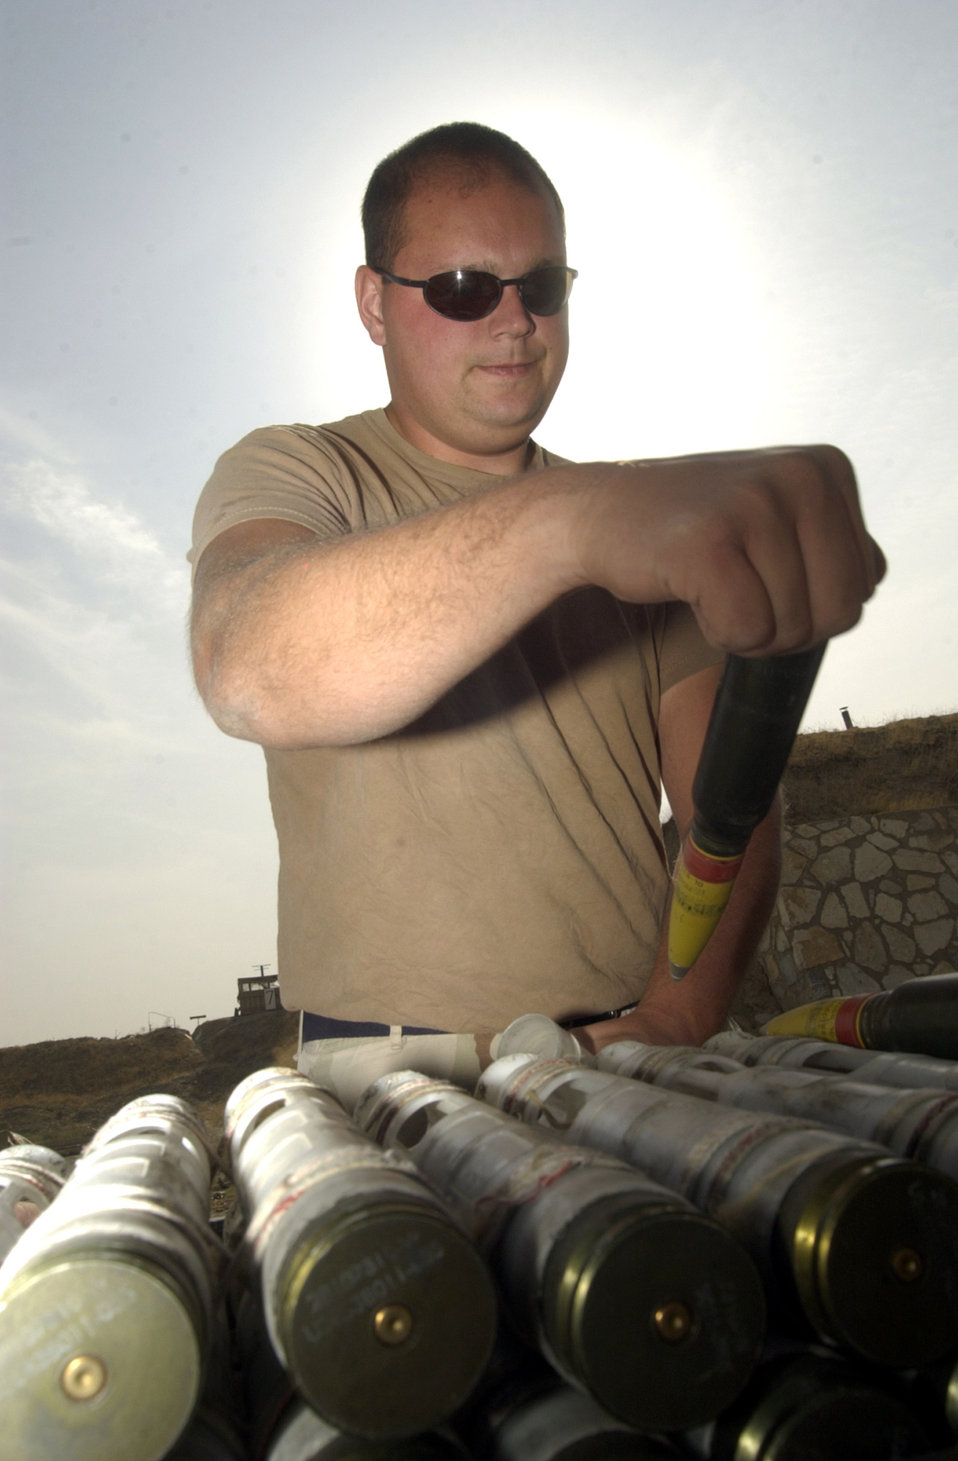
Preparing ammo

BAGRAM AIR BASE, Afghanistan -- Staff Sgt. Jerrad Oakes prepares to place a 30 mm ammunition round in a loading sleeve so it can be loaded on an A-10 Thunderbolt II for combat here. Oakes is assigned to the 455th Expeditionary Operations Group and is deployed as part of Air and Space Expeditionary Force Blue from Spangdahlem Air Base, Germany. Airmen with AEF Silver are replacing those with AEF Blue.